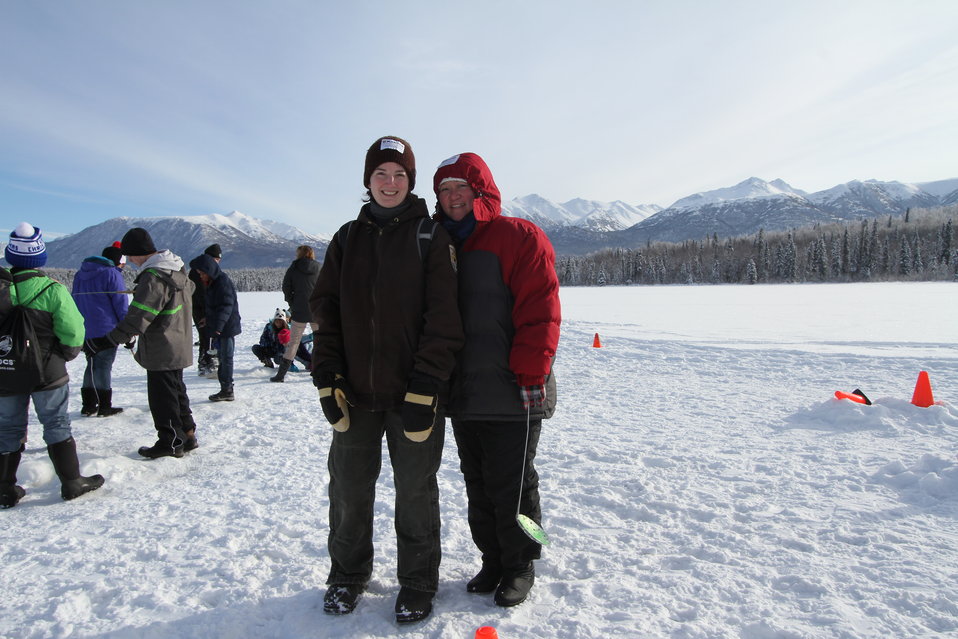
Connecting kids to fish via ice fishing

the USFWS partnered with Alaska Department and Game in February 2014 to introduce 350 kids to ice fishing. USFWS/Katrina Mueller